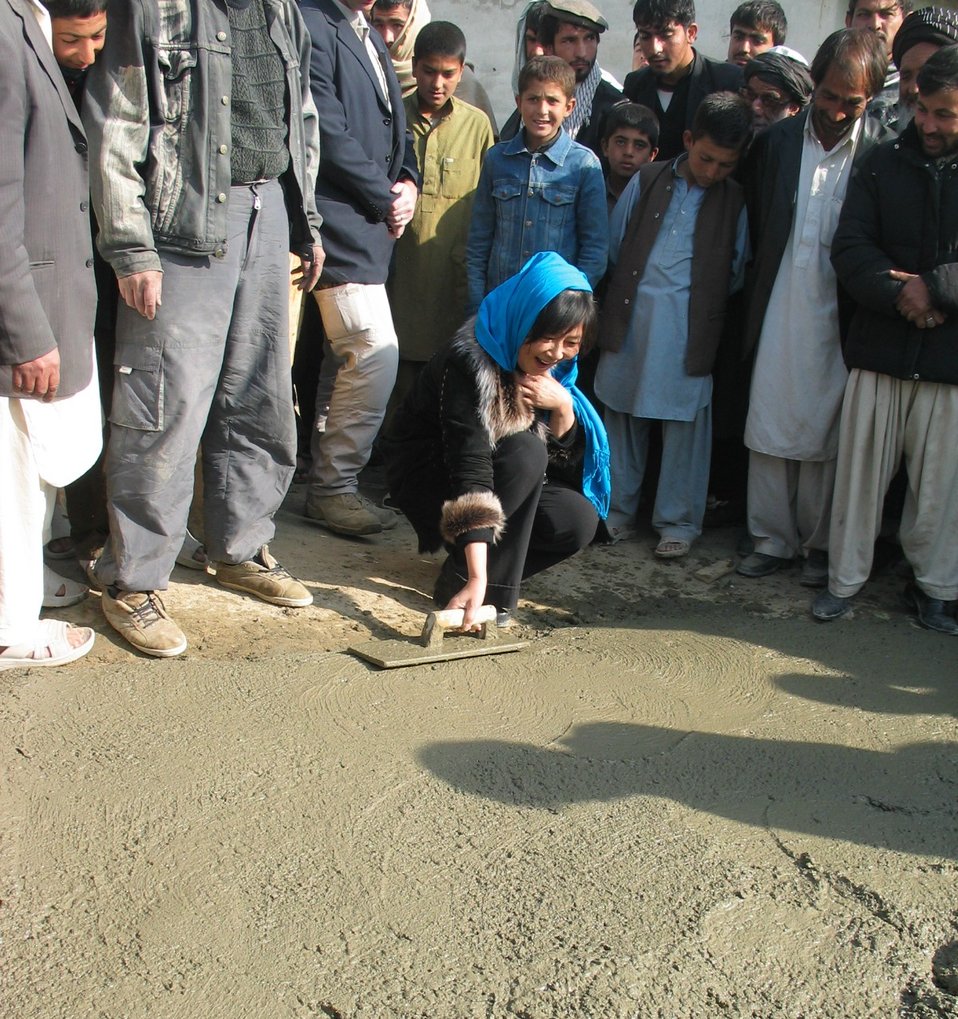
Kabul River Bridge Renovation, December 3, 2010